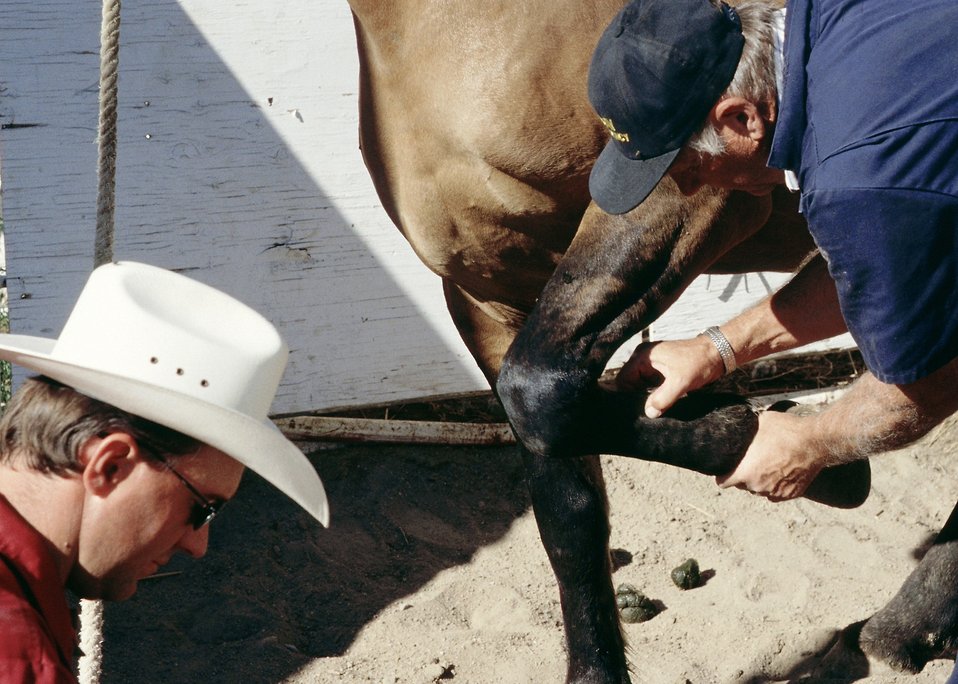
Wild Horse (medical)